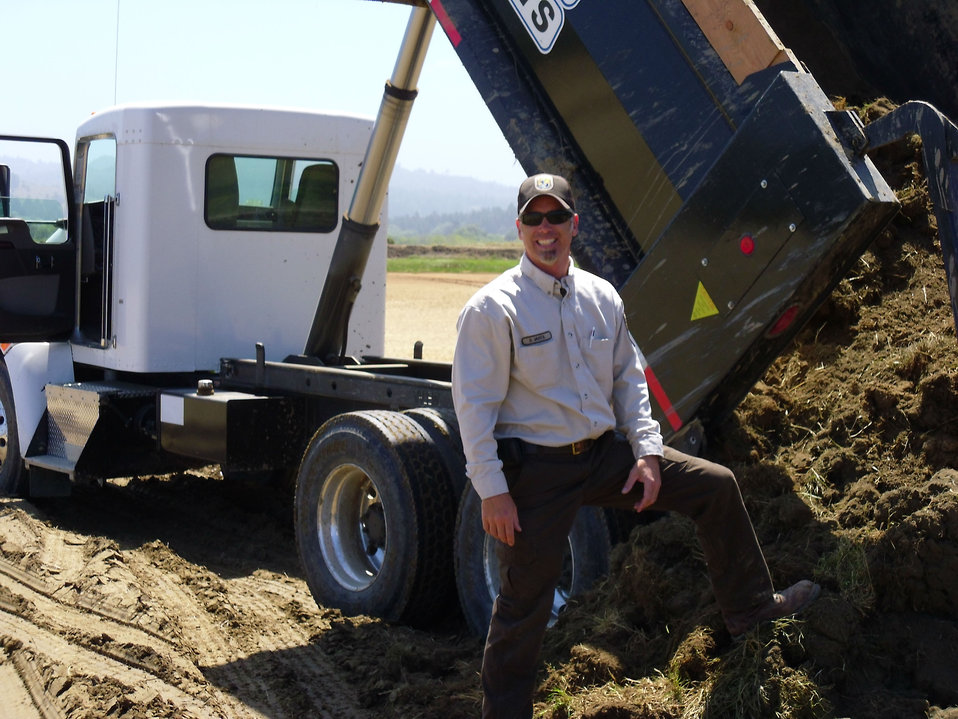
Ed Van Til (U.S. Navy 1986-1990 and USN Reserve 2005-2010) served in Afghanistan from 2006-2007. He is currently a maintenance worker at Don Edwards San Francisco Bay NWR.